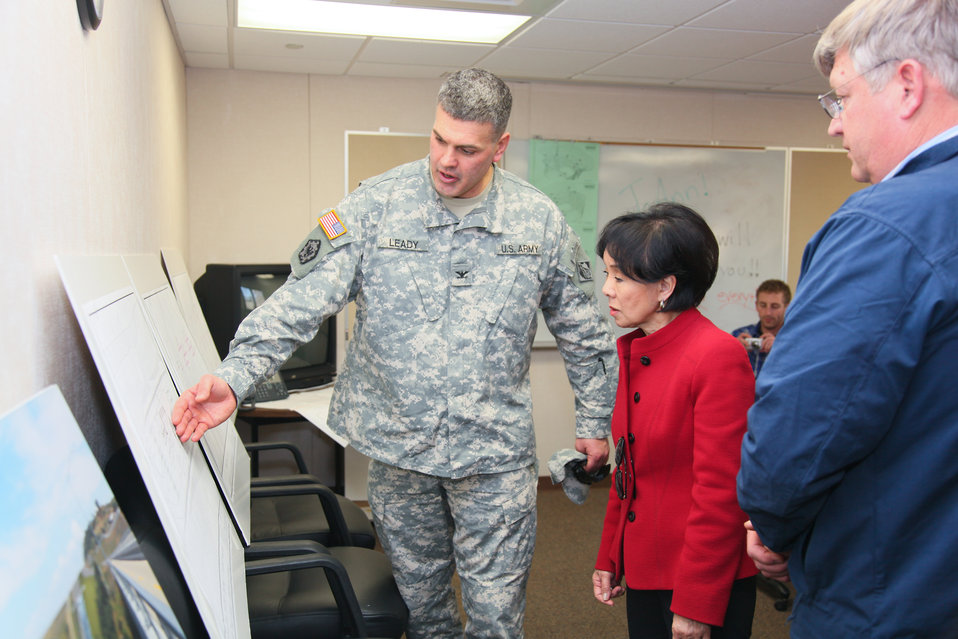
Congresswoman Doris Matsui visits the excavation at the spillway for the Folsom Dam

U.S. Army Corps of Engineers Sacramento District commander Col. Bill Leady (left) and project engineer Jon Revolinsky (right) update Congresswoman Doris Matsui (center)on the progress and timelines for the excavation and construction of the auxiliary spillway at the Folsom Dam. The congresswoman and her staff visited the site in Folsom, Calif. on Jan. 13, 2012.
The spillway will allow Folsom Dam to release water sooner and more safely. The project is part of the Folsom Dam Joint Federal Project, a joint effort of the U.S. Army Corps of Engineers Sacramento District, the U.S. Bureau of Reclamation, the Central Valley Flood Protection Board and the Sacramento Area Flood Control Agency to improve the safety of the dam and reduce flood risk for the greater Sacramento area.